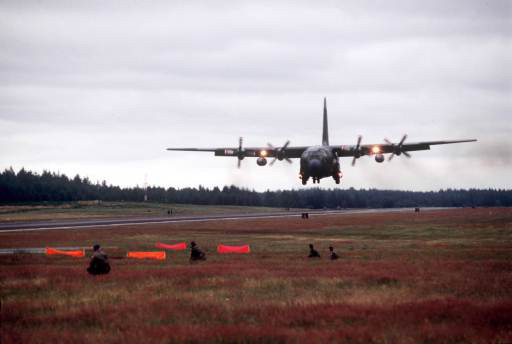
Air Force plans to deactivate Willow Grove wing

A C-130 Hercules prepares to land. C-130s are flown by Airmen assigned to the 913th Airlift Wing at Naval Air Station Joint Reserve Base in Willow Grove, Pa. Air Force Reserve Command officials briefed congressional leaders Jan. 3 on plans to deactivate the command's 913th AW.